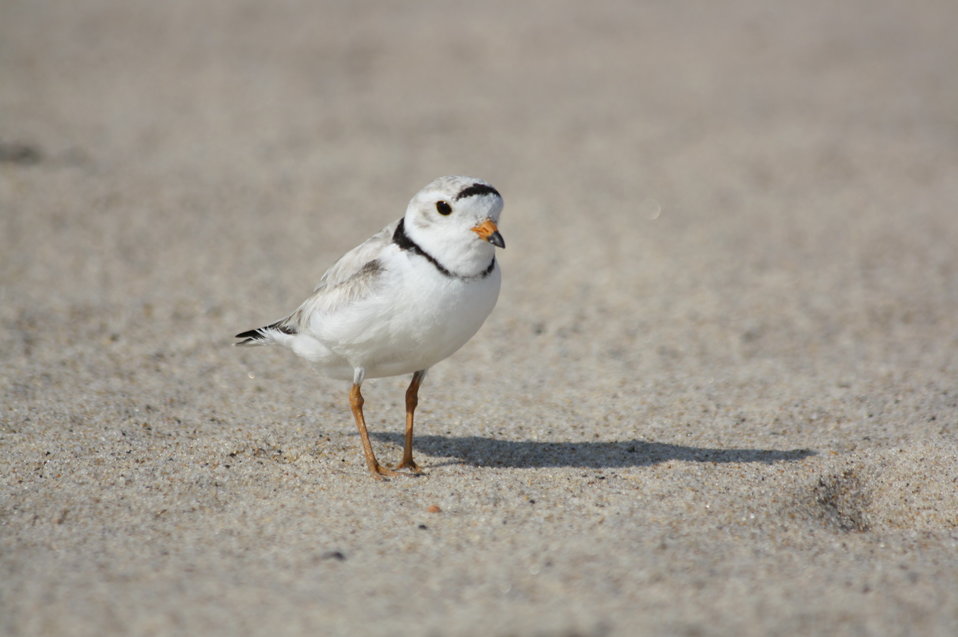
Piping plover at Amagansett National Wildlife Refuge.